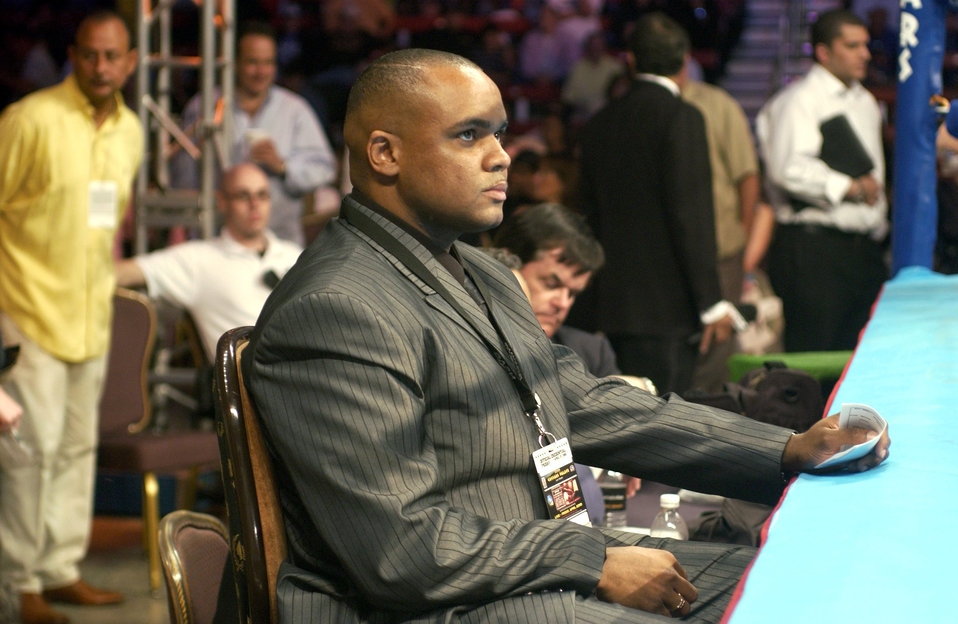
No courtroom needed, all decisions made in ring

LAS VEGAS -- Master Sgt. Robert Hoyle judges a championship fight here. Sergeant Hoyle has been a professional boxing judge for six years and is sanctioned by the Nevada Athletic Commission. He is a plans and programs flight superintendent with the 99th Communications Squadron at nearby Nellis Air Force Base.